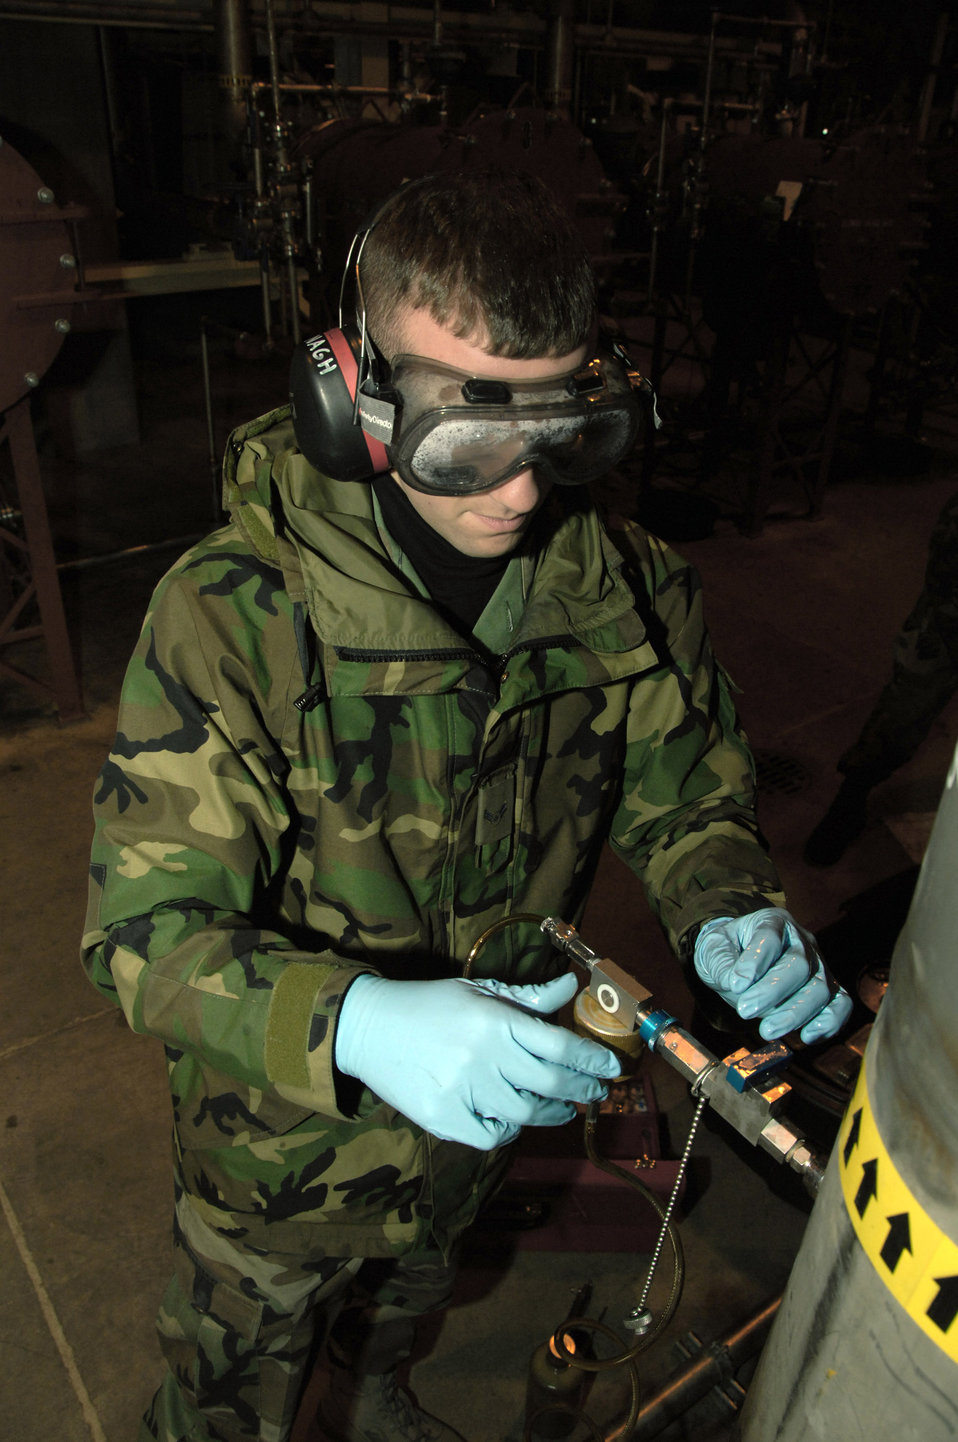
'Fuel Doctor' on duty

Airman 1st Class Sean McDonagh connects an inline sampler which is used to detect free water in fuel Oct. 24 at Eielson Air Force Base, Alaska. Making sure the fuel used by the aircraft at Eielson is always good to go, Airman McDonagh helps assure the process by constantly sampling the fuel lines and the trucks that distribute it to the aircraft. Airman McDonagh is a fuels laboratory technician assigned to the 354th Logistic Readiness Squadron.